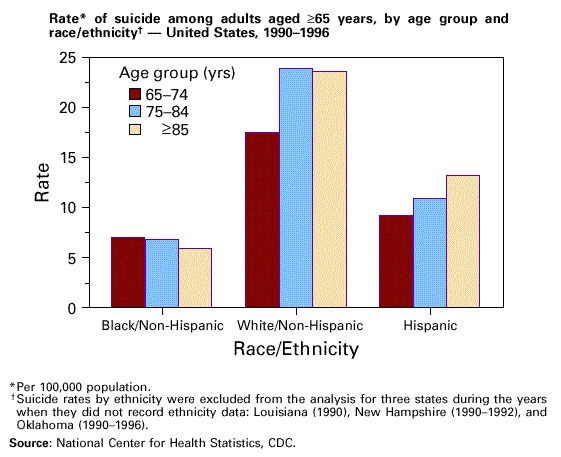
Rate of suicide among adults aged 65 years and older, by race/ethnicity.